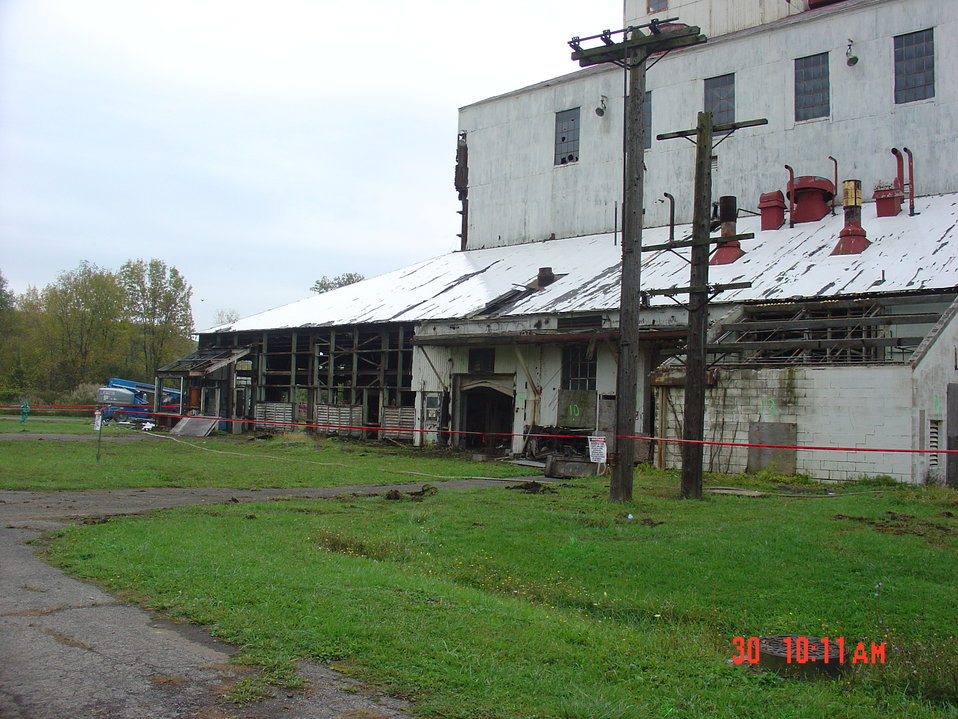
NFSS 401 asbestos siding removal.
Activities from the Niagara Falls Storage Site, which is associated with the former Lake Ontario Ordnance Works. Formerly Utilized Sites Remedial Action Program (FUSRAP), a program initiated in 1974 to identify, investigate and clean up or control sites that were part of the Nation's early atomic energy and weapons program. Activities at the sites that are eligible for FUSRAP were conducted by Manhattan Engineer District (MED) or the Atomic Energy Commission (AEC), both predecessors of the Department of Energy (DOE). The U.S. Army Corps of Engineers was assigned management of FUSRAP by Congress in 1997.